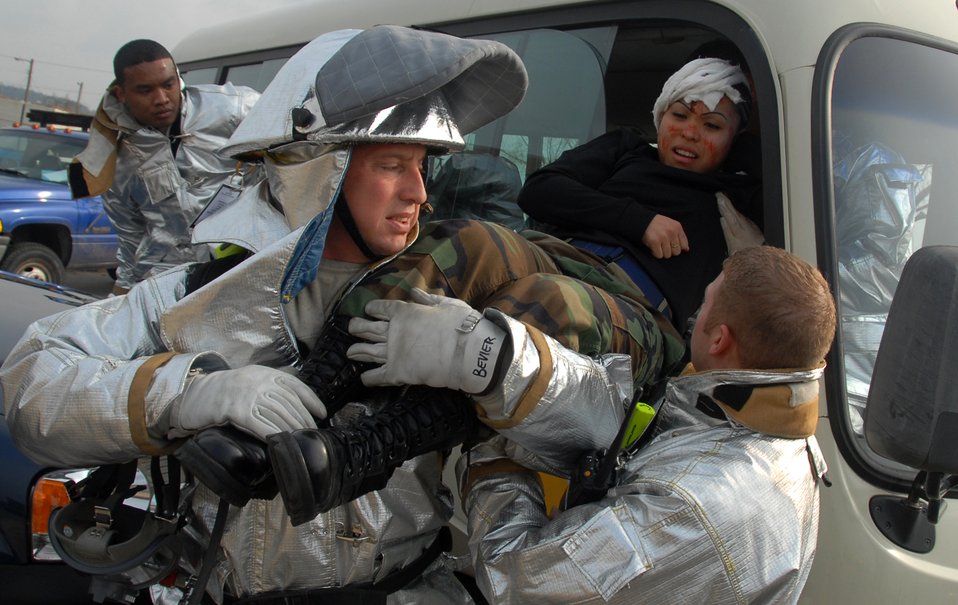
Wolf Pack Warriors

Members of the 8th Fighter Wing disaster response team rescue Staff Sgt. Kim Juliano from a vehicle during a simulated traffic accident Feb. 9. The major accident response exercise on Kunsan Air Base, South Korea, was designed to provide realistic training for emergency response teams and simulated a major vehicle accident with multiple victims. Sergeant Juliano is assigned to the 8th Communications Squadron.